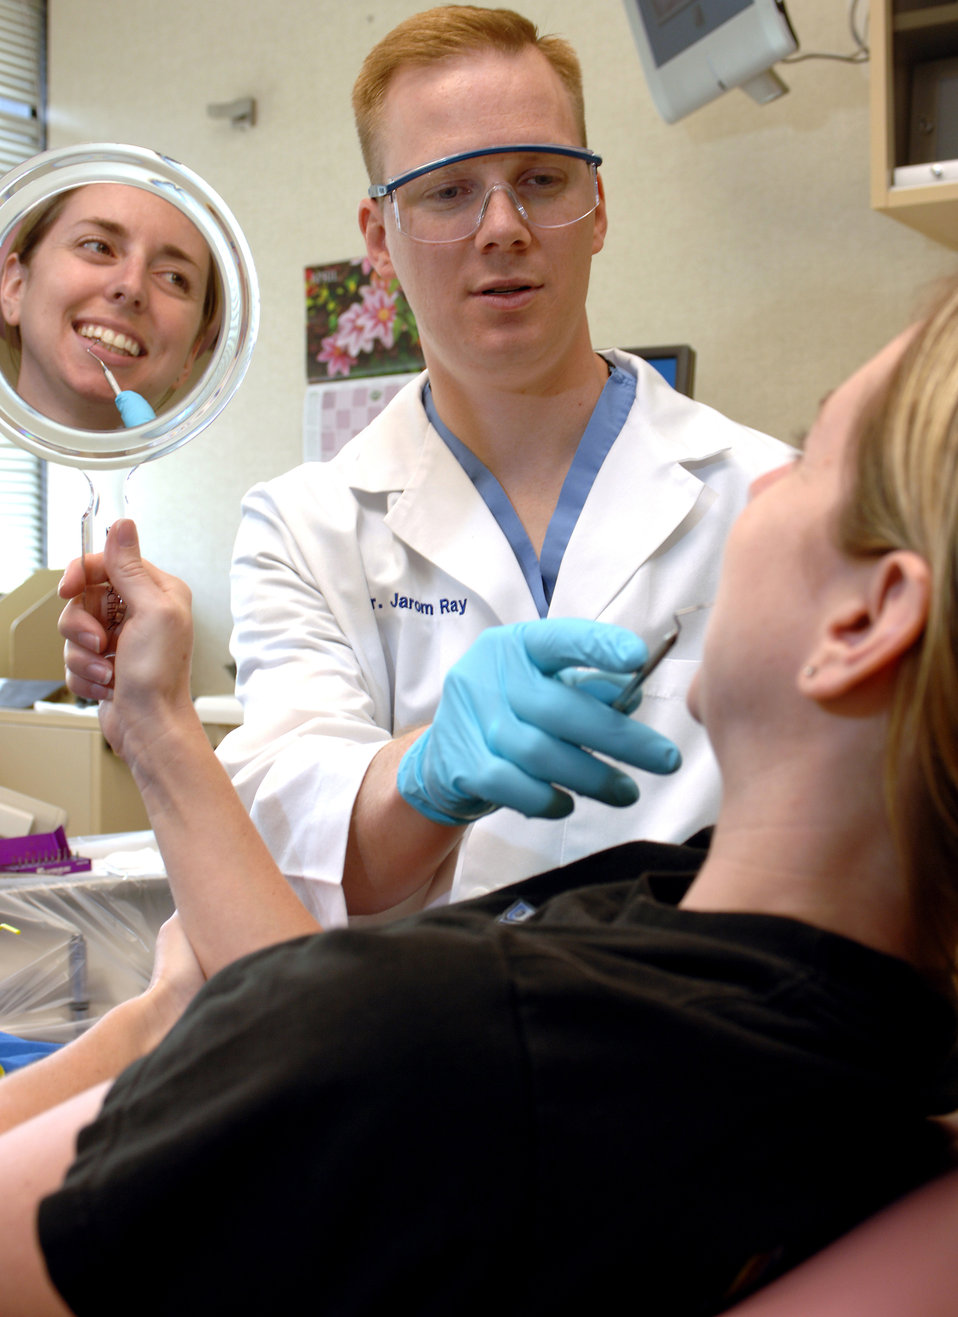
Air Force still hiring

Capt. (Dr.) Jarom Ray discusses a dental procedure with a patient. Medical is one of several